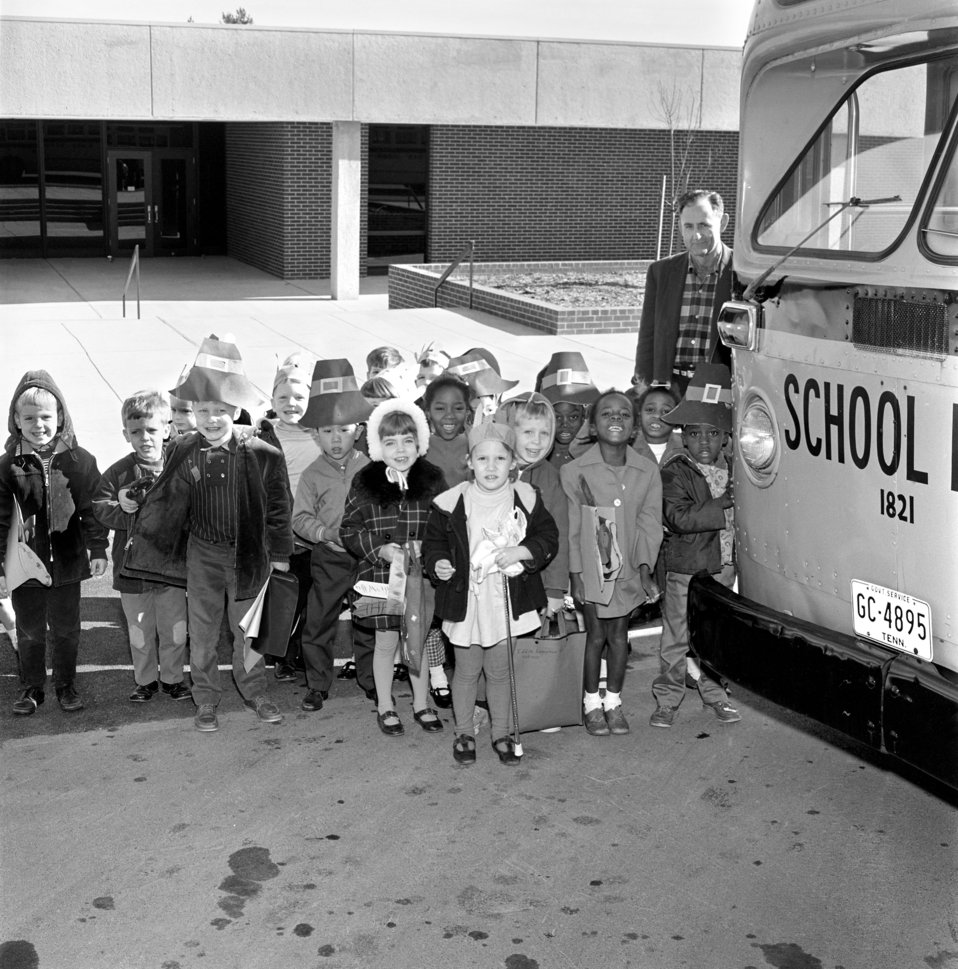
Childen at School Bus Oak Ridge 1968

68-588a DOE photo Frank Hoffman 11-1968 Oak Ridge Tennessee